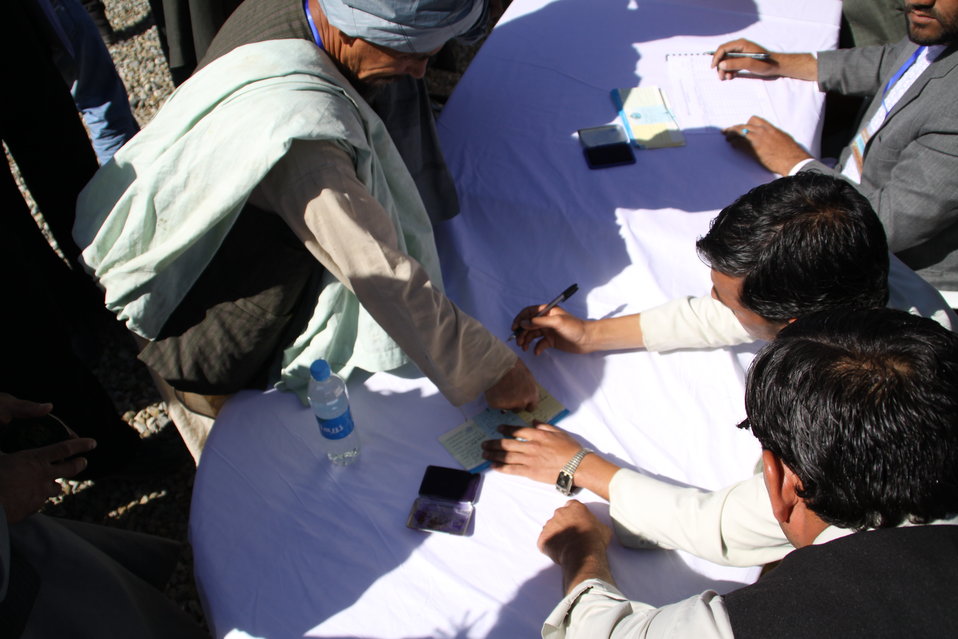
AVIPA Plus Wheat Seed Distribution 101005

US Ambassador Karl Eikenberry and USAID Acting Mission Director Kevin Brownawell joined the Minister of Agriculture, Irrigation and Livestock, H.E. Minister Mohammed Rahimi in signing a Memorandum of Understanding and distributing vouchers to area farmers for wheat and fertilizer.

US Ambassador Karl Eikenberry and USAID Acting Mission Director Kevin Brownawell joined the Minister of Agriculture, Irrigation and Livestock, H.E. Minister Mohammed Rahimi in signing a Memorandum of Understanding and distributing vouchers to area farmers for wheat and fertilizer.